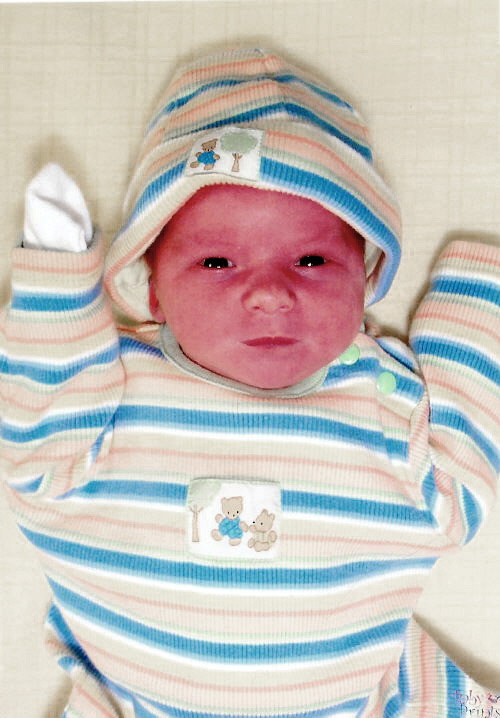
Breast-feeding despite cancer

HANSCOM AIR FORCE BASE, Mass. -- Born Dec. 22, Grayson Riley Connel almost did not get the chance to breast-feed from his mother. Jenn Connel is a breast-cancer survivor and had a double mastectomy in 2002. Her quest to breast-feed led her to use donated breast milk and a supplemental nursing system.